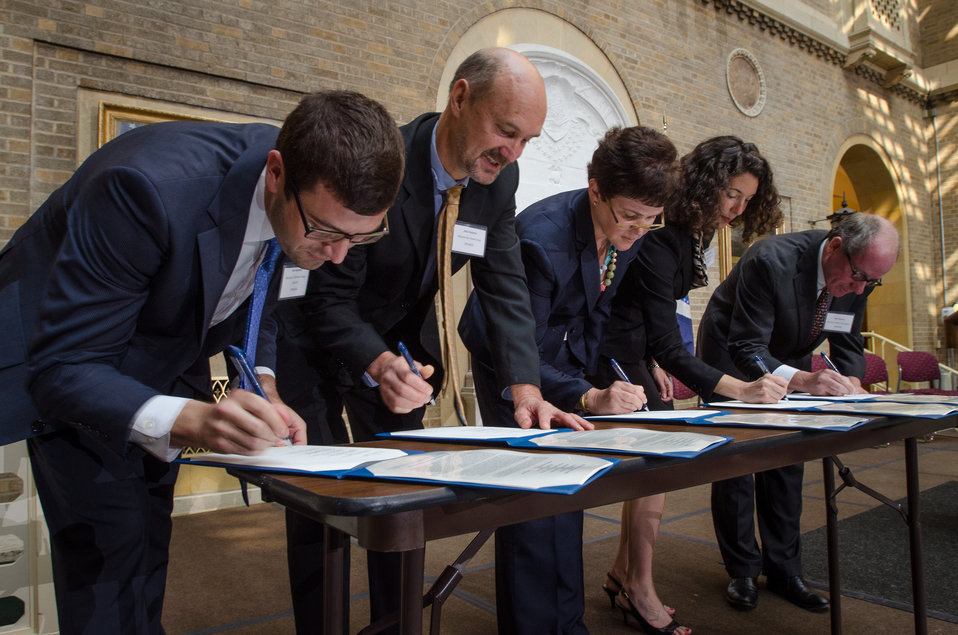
U.S. Department of Agriculture (USDA) Bioenergy Memorandum of Understanding, is signed by wood energy partners (left - right) Biomass Thermal Energy Council, Executive Director Joseph Seymour; Alliance for Green Heat, President John Ackerly, USDA Deputy Agriculture Secretary Krysta Harden; Pellet Fuels Institute Executive, Director Jennifer Hedrick; Biomass Power Association, President and CEO Bob Cleaves, at the USDA Headquarters, in Washington, D.C., on Wednesday, September 11, 2013.
The partnership agreement focuses on promoting wood energy nationwide as a means to address fire risks, bolster rural economic development, improve air quality, and help meet the Obama Administration’s renewable energy and energy efficiency goals. These organizations support the use of wood energy across the scale of users – from residential users, to commercial and intuitional facilities, to industrial production of heat and or electricity to drive businesses and feed the electrical grid.
Under the terms of the five grants announced by Deputy Secretary Harden, private, state and federal organizations will work together to stimulate the development of additional wood energy projects in their states. Collectively, $2.9 million will be spent o this effort -- $1.1 million on federal funds and $1.8 million in non federal funds. For more information o0n the cooperative agreement program, visit na.fs.fed.us.werc/wood-energy/ USDA Photo by Lance Cheung.